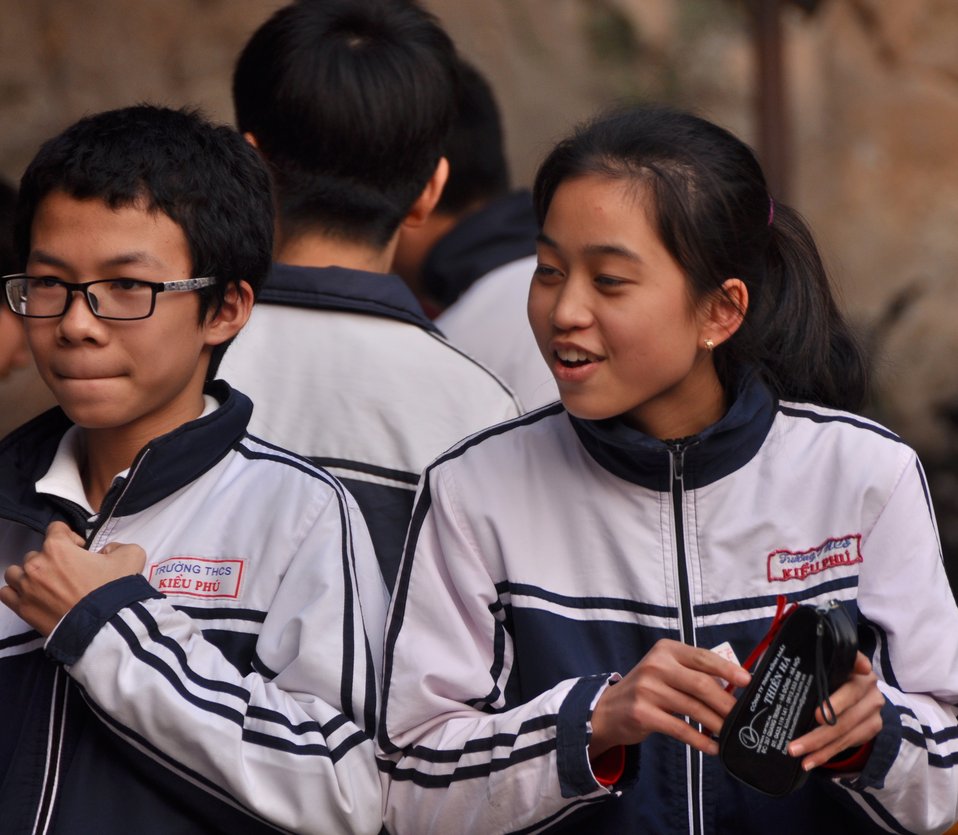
USAID supports distribution of eyeglasses to pupils and teachers in Quoc Oai, Hanoi.

Kieu Phu Junior Secondary School, Quoc Hoai, Hanoi, December 23, 2013.